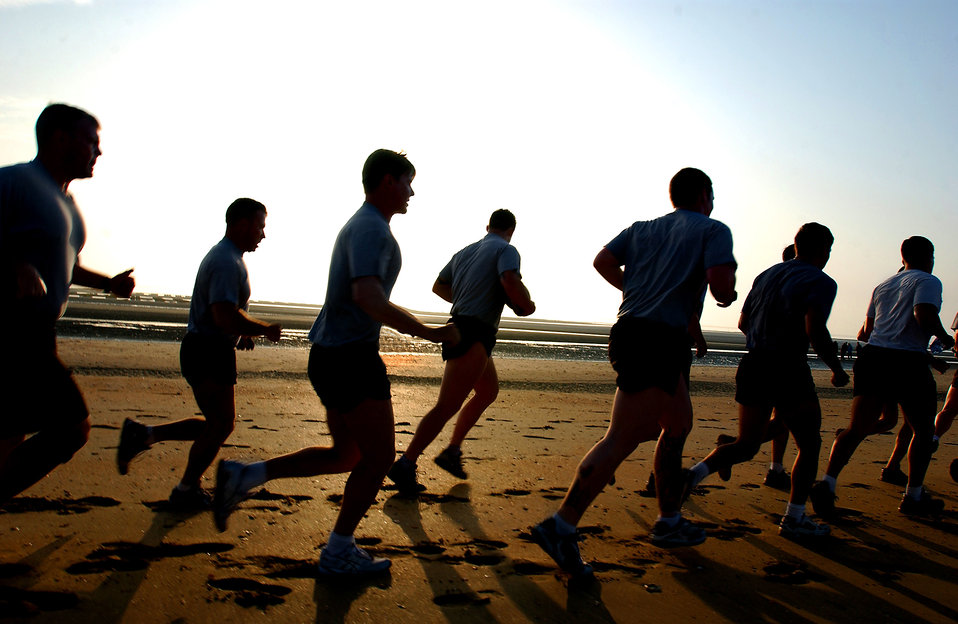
Run of rememberance

ROYAL AIR FORCE MILDENHALL, England -- People from the 321st Special Tactics Squadron take a 3-mile morning run on Utah Beach here exactly 60 years after D-Day on June 6. The run was to honor all those who gave their lives during the Normandy Invasion in 1944.